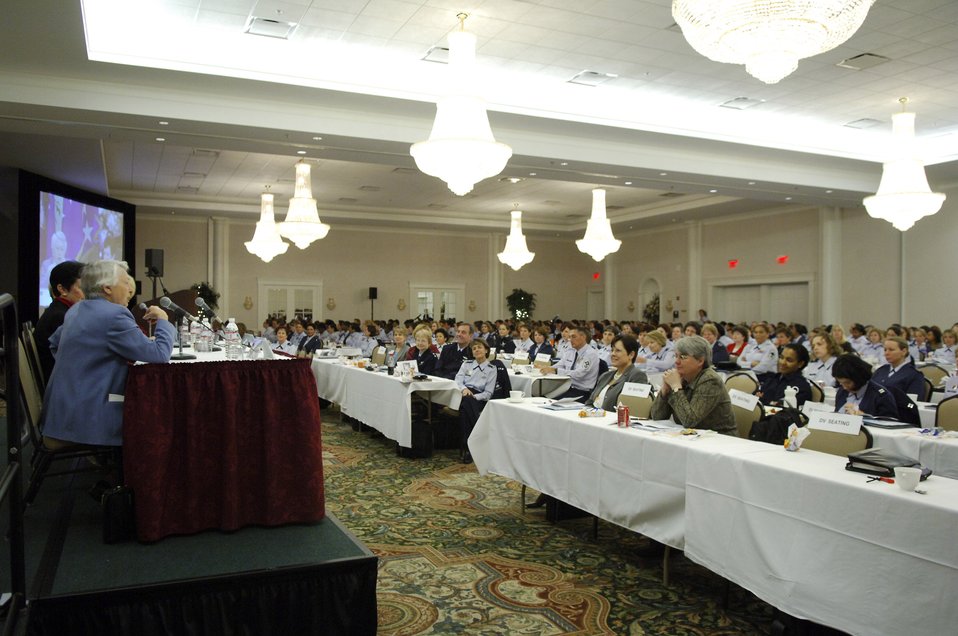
Captial Shield 2008

Brig. Gen. Wilma Vaught, Col. Regina Aune, Chief Master Sgt. Dottie Holmes, Senior Master Sgt. Terri Picarro and Mrs. Margaret Ringenberg answer questions to Air Force women of all ranks in Springfield, Va., during the 2007 Air Force Heritage to Horizon Women's Training Symposium Oct. 31.